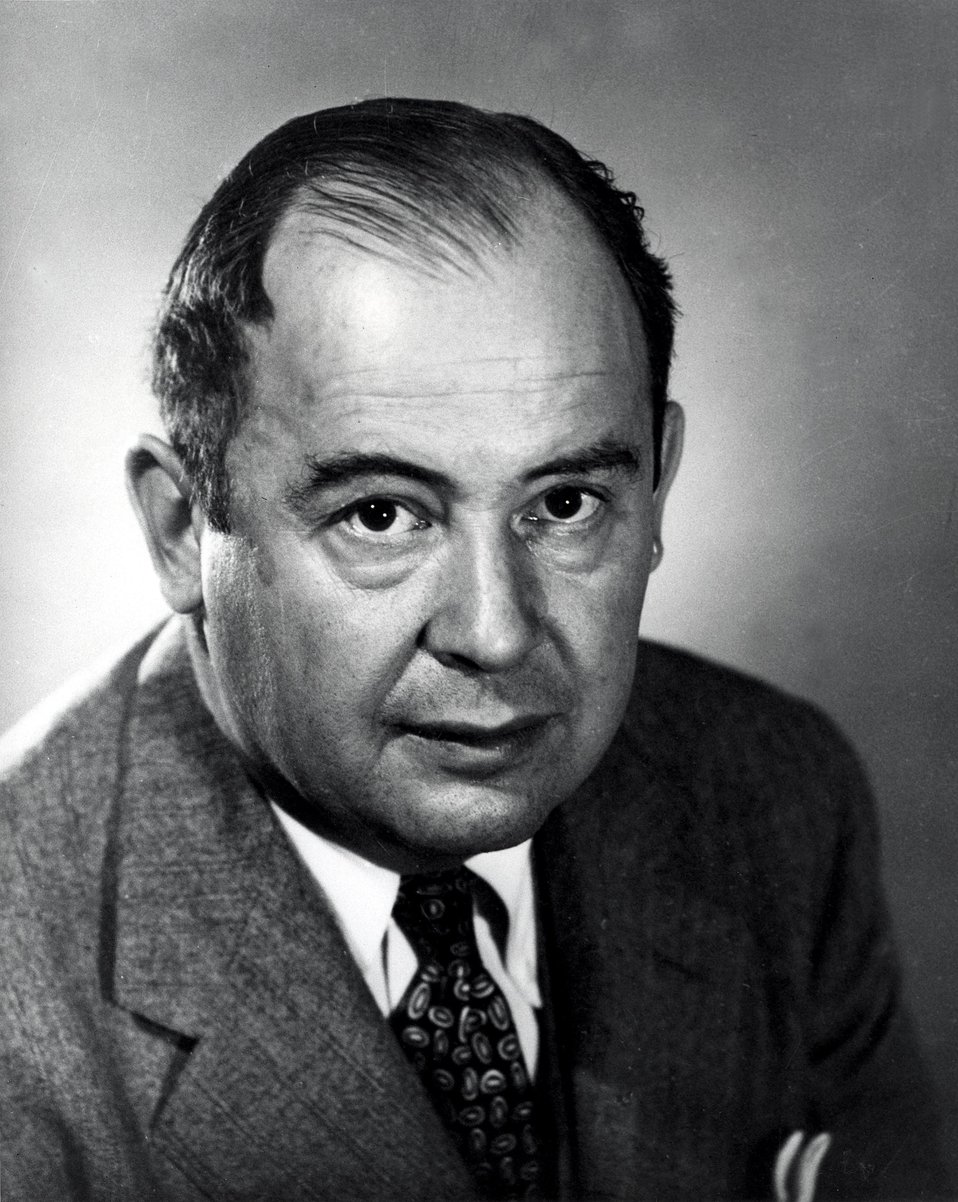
Fermi Award. Recipient: John Von Neumann. Date: 1956.